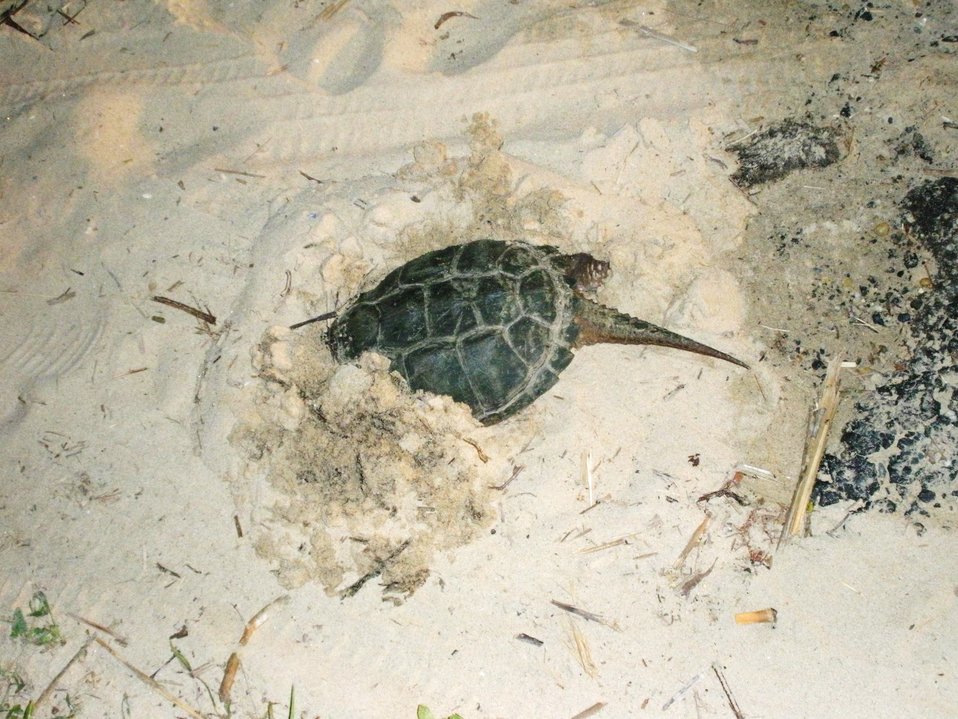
Snapping turtle taking refuge in a sandy beach